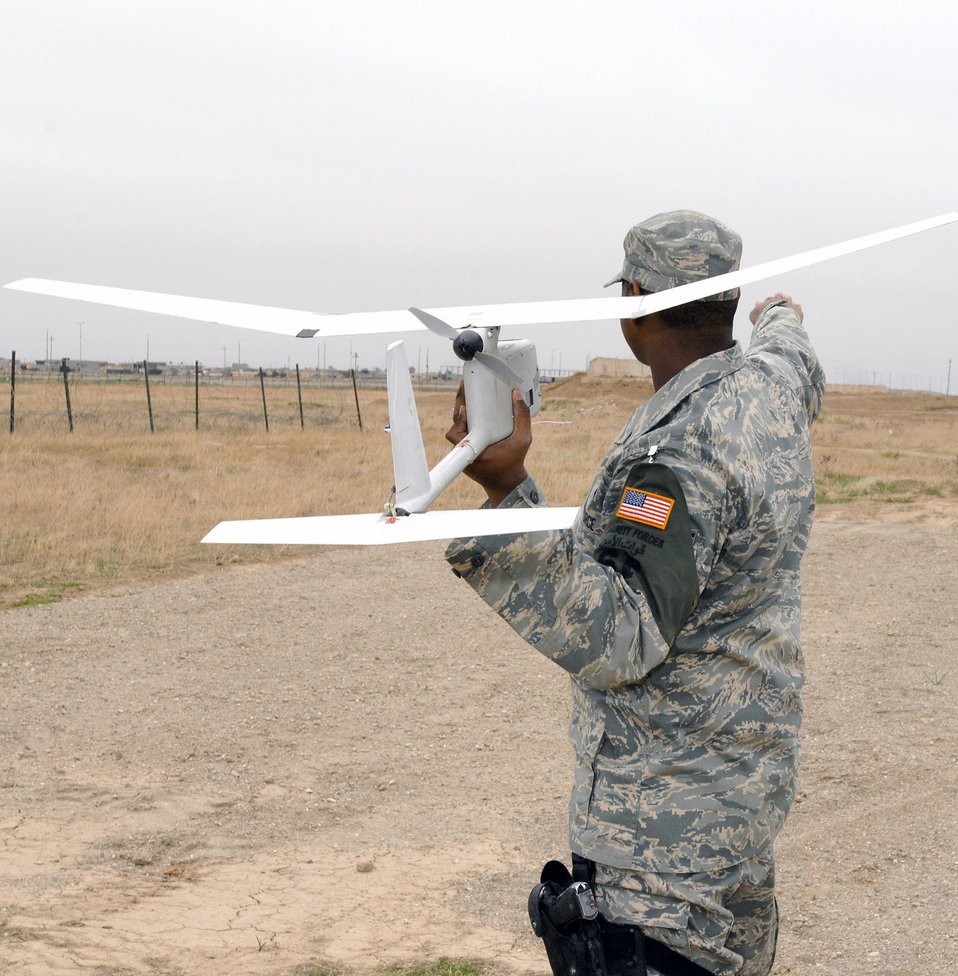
UAVs aid force protection efforts

Senior Airman Glenn Gerald prepares to put an RQ-11 Raven in flight during a January mission at Kirkuk Air Base, Iraq. Despite weighing in at less than 5 pounds, these unmanned aerial vehicles play a vital role in securing the base and surrounding neighborhoods. Airman Gerald is a 506th Expeditionary Security Forces Squadron Raven operator.